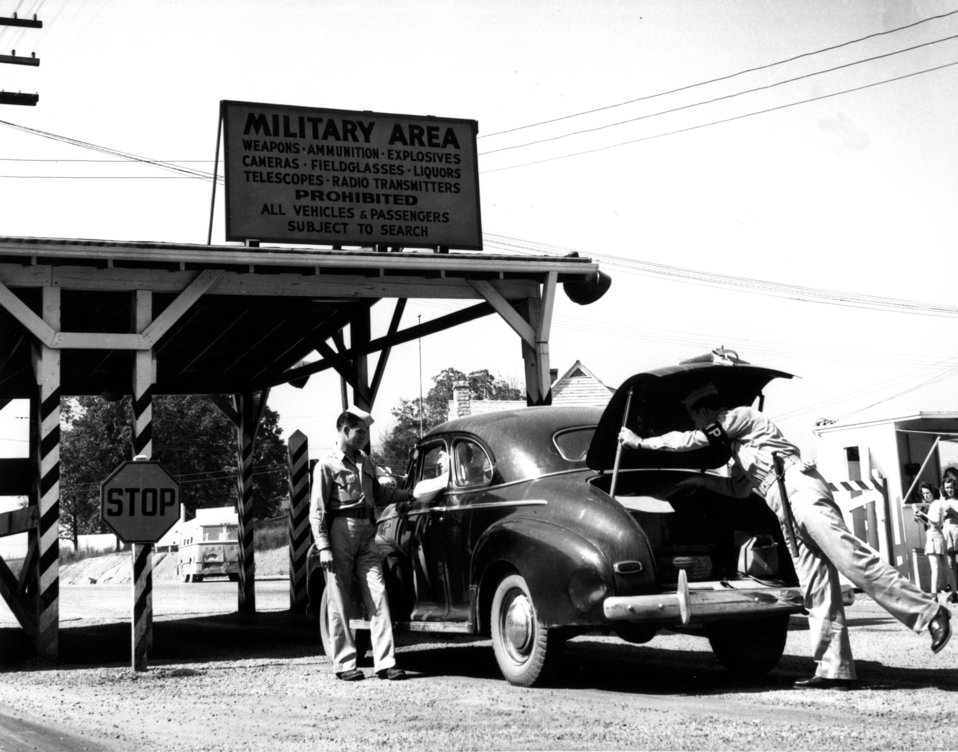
Security at Oak Ridge